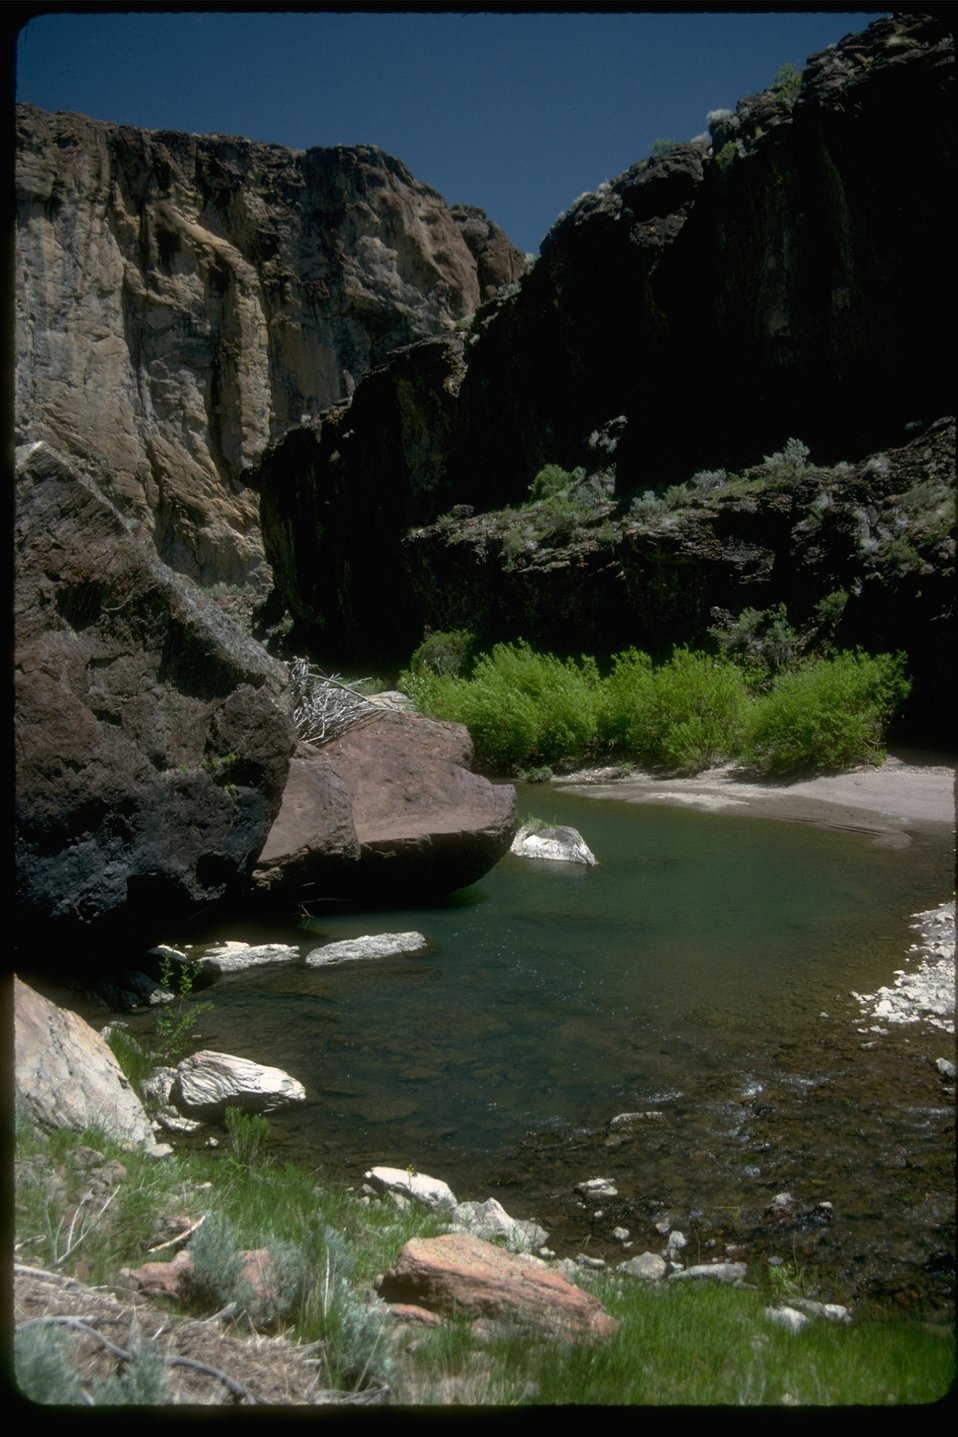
The Owyhee River in the Upper West Little Owyhee Wilderness Study Area. OR 3-110